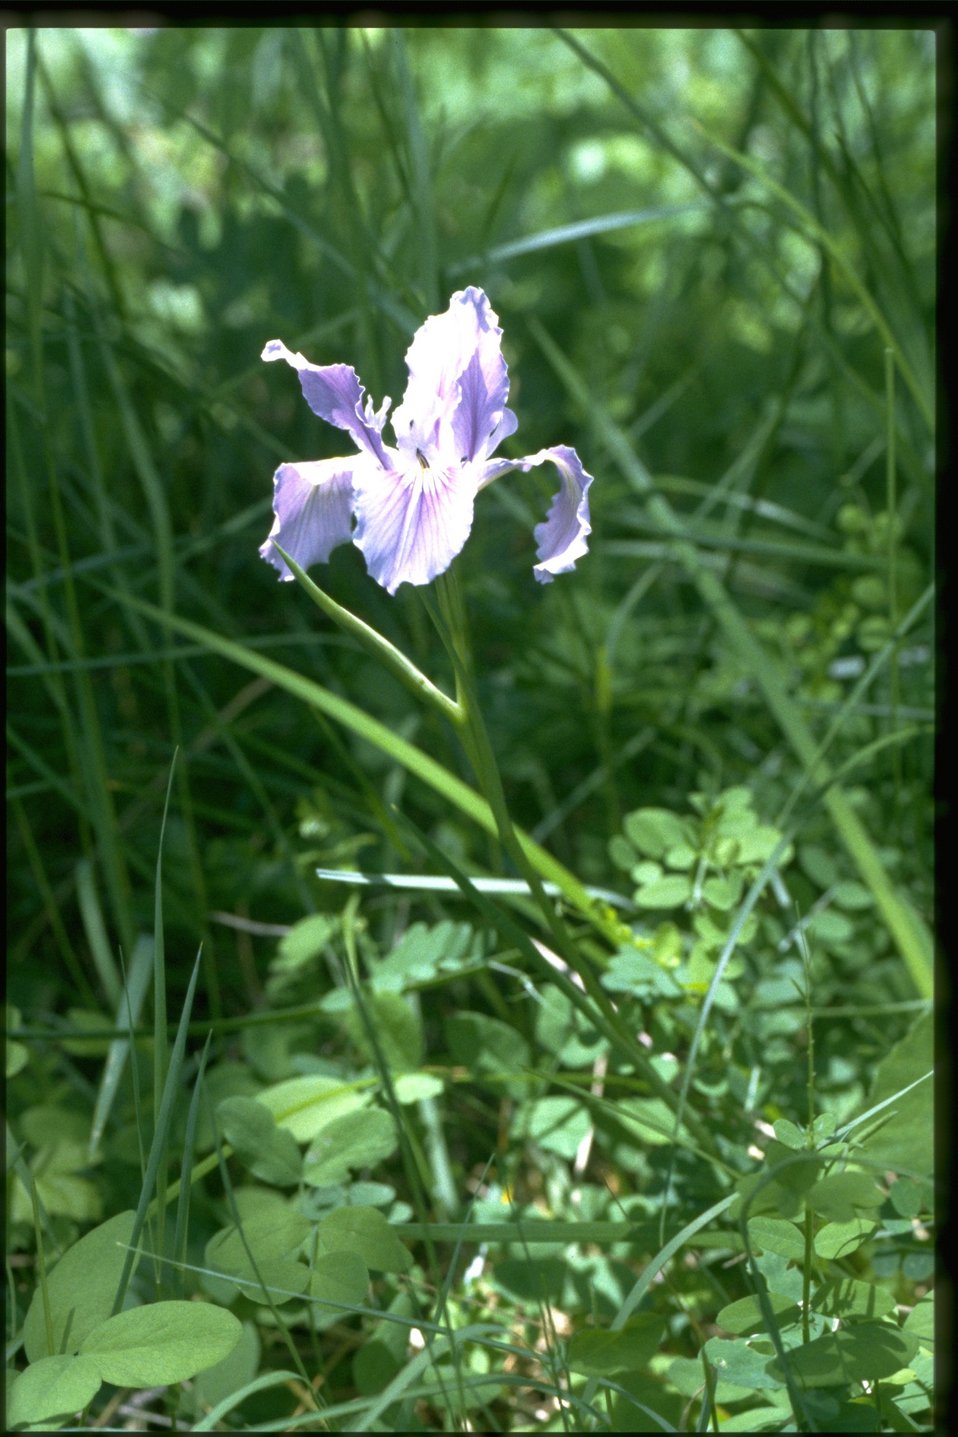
Medium shot of Iris tenax.